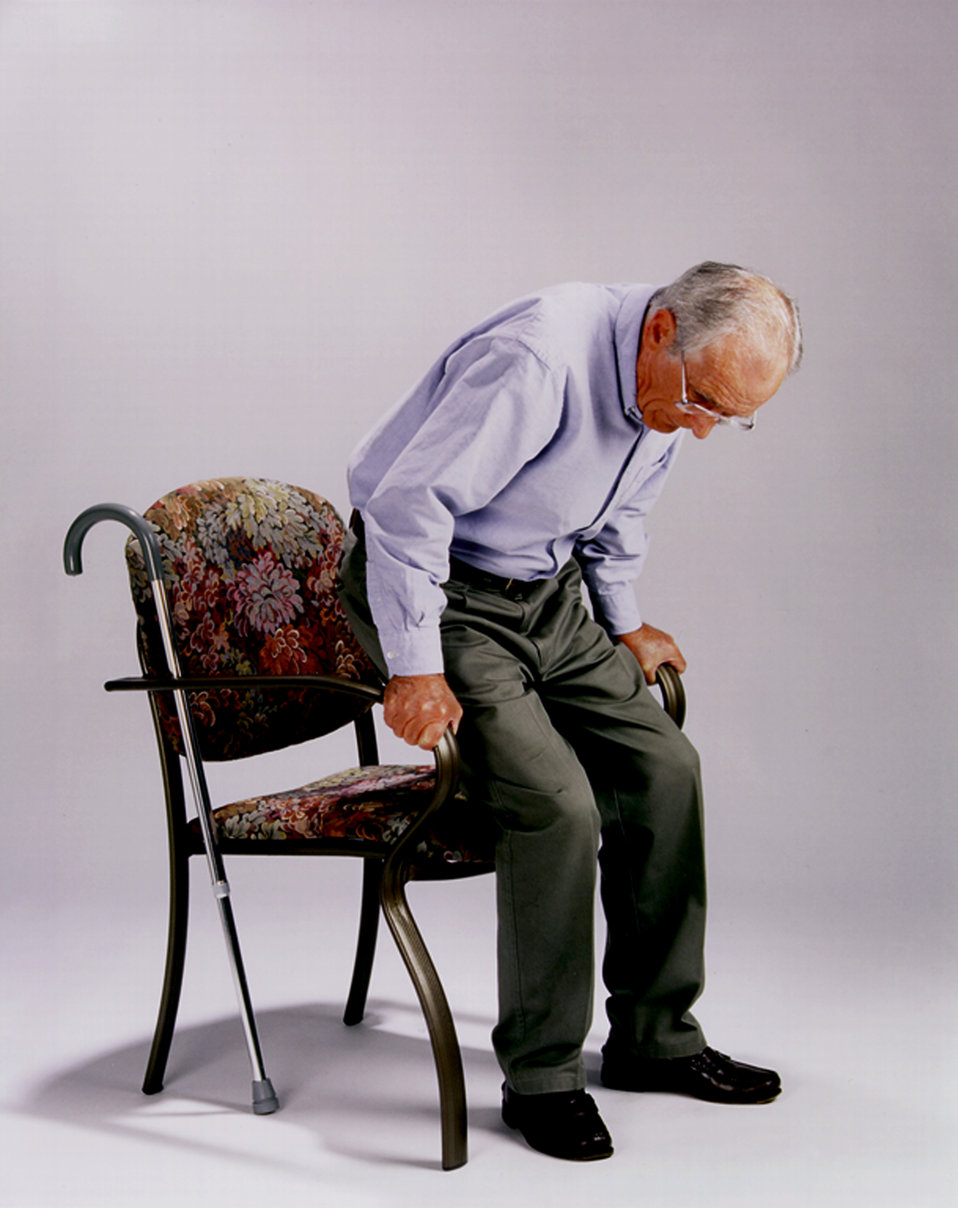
This is one of a series of ten images, (PHIL# 9144 - 9153), depicting one of LifeSpan� Furnishing's line of chairs, designed to make sitting down and rising safer and easier, and sitting more comfortable and supportive. This elderly man, who'd been using a walking cane, was pictured sitting down. PHIL# 9150 showed this man in the seated position. These chairs combined aesthetics and function, and were more comfortable for most people, benefiting those who would care for others, by reducing physical exertion and stress needed when assisting others. The user could take advantage of the extended arms for stability when lowering or rising from a seated position. Close attention was paid to many small details including the non-skid rubber feet, and the elimination of pinch points and sharp edges. The LifeSpan� seating product line included four different designs, all based on an extended arm and leg concept that provided users with better leverage and support.